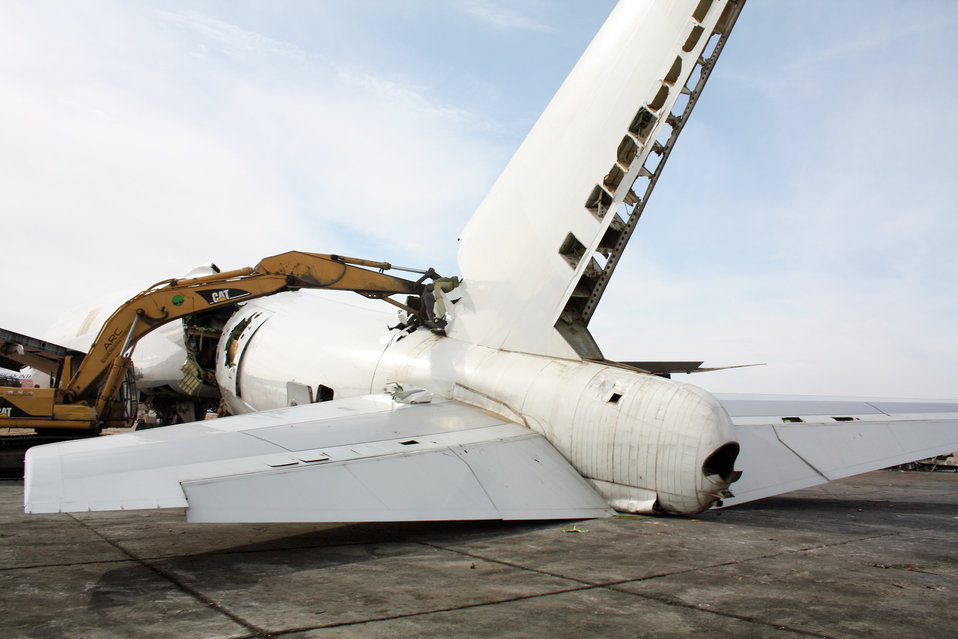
Green businesses

A Boeing 747 cargo plane is disassembled for recycling by workers at the Aircraft Recycling Corporation at the former George Air Force Base in Victorville, Calif. About 80 to 85 percent of an airplane is recyclable.